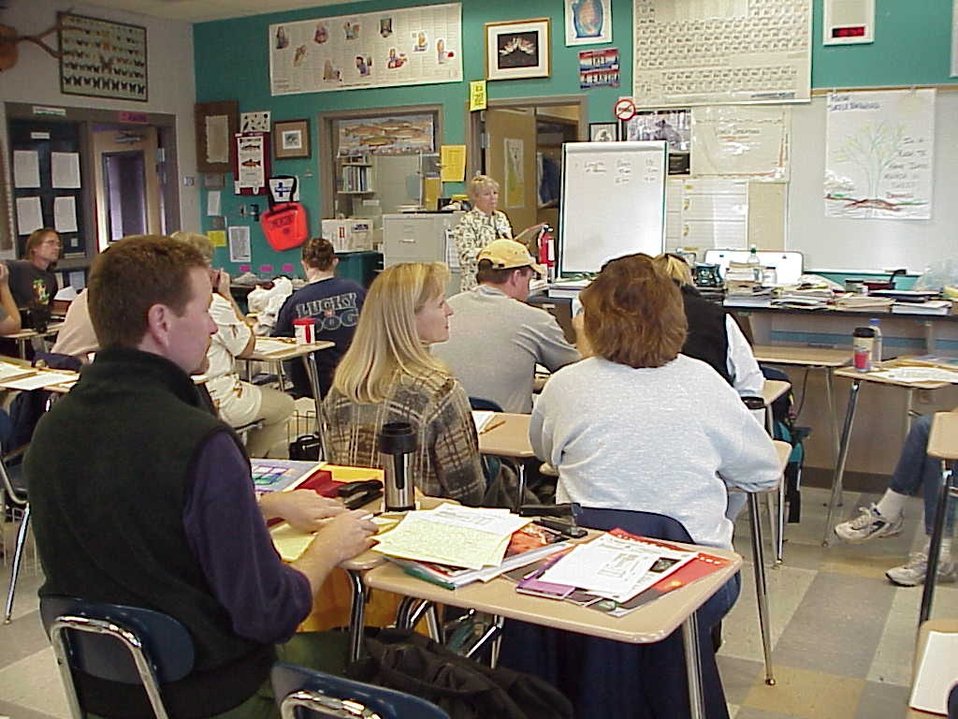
Environmental Education Fire Workshop Timberline High School Fall 2000